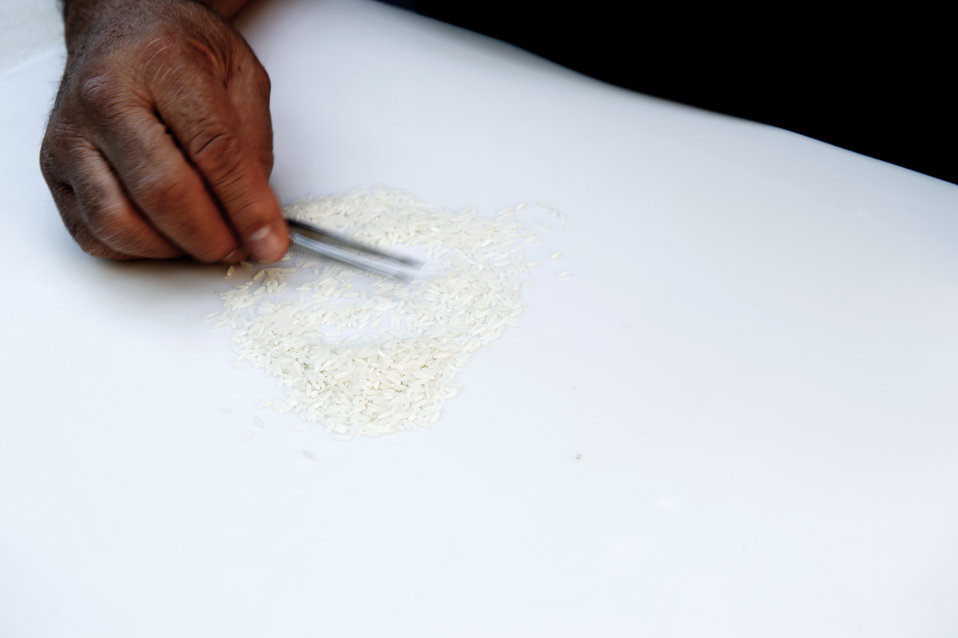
U.S. Department of Agriculture (USDA) Grain Inspection, Packers and Stockyards Administration (GIPSA) Federal Grain Inspection Service (FGIS) employee examines rice samples on white background to check for imperfections at the FGIS inspection laboratory in New Orleans, LA on Monday, Nov. 18, 2013.